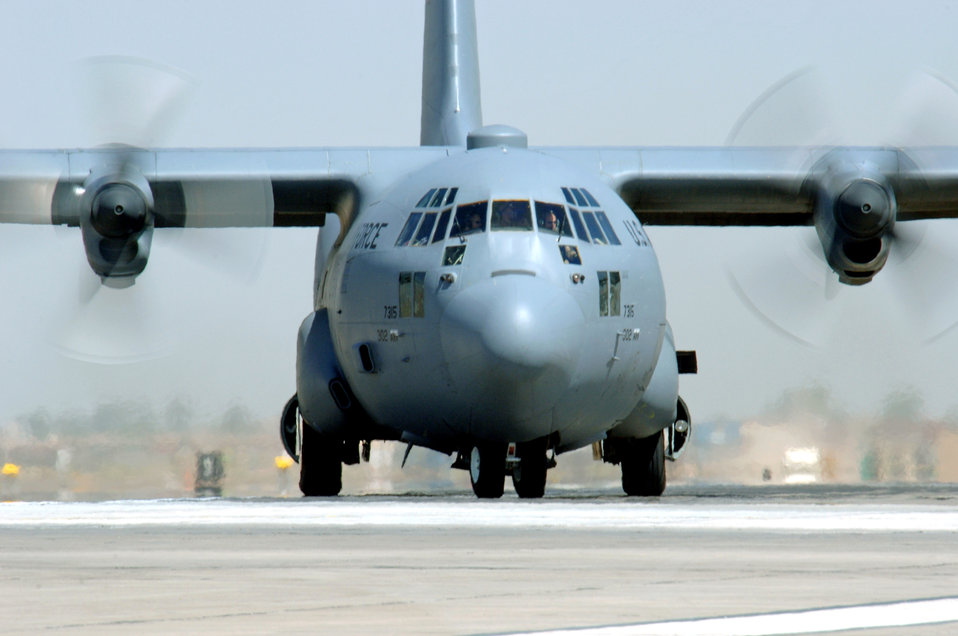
Flying missions support Operation Iraqi Freedom

A C-130 Hercules taxis at Balad Air Base, Iraq, after an Operation Iraqi Freedom mission on Monday, June 12. The C-130 is deployed from the Colorado Air National Guard's 439th Airlift Wing in Colorado Springs.